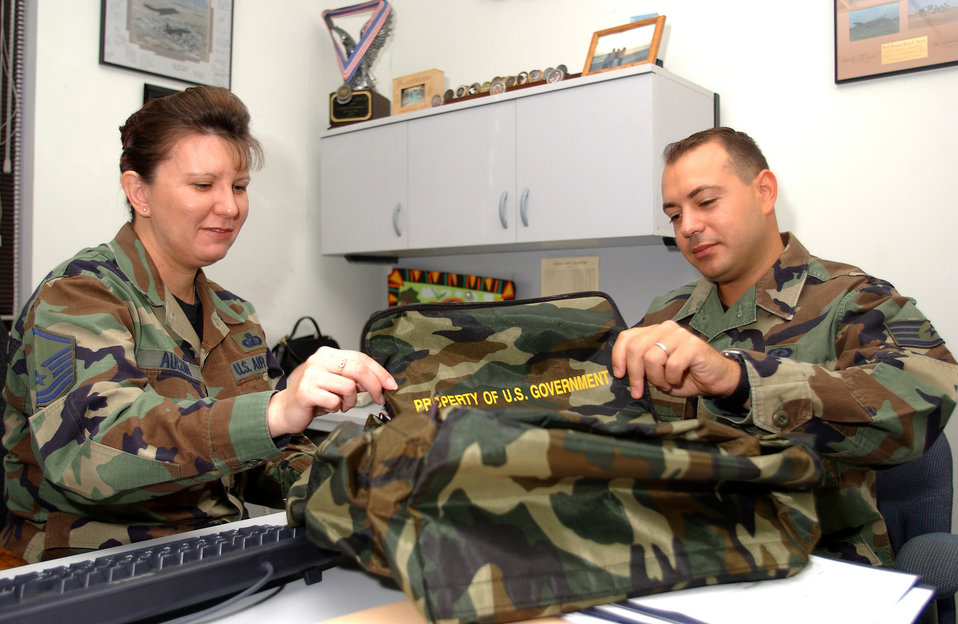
Celik

INCIRLIK AIR BASE, Turkey -- Master Sgt. Dawn Aucoin (left) and Staff Sgt. Erim Celik inspect a chemical warfare bag. Celik is a Turkish native who fulfilled his dream to become an American by joining the Air Force. Both are assigned to the 39th Contracting Squadron here.